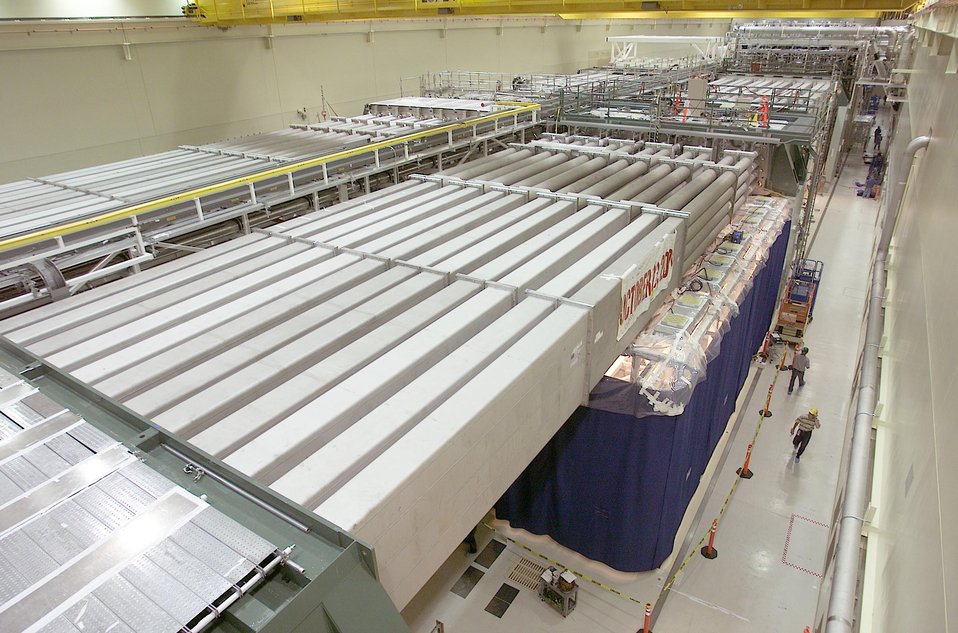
NIF'S LASER BAY 2 BEAM-PATH INFRASTRUCTURE AS COMPLETED, MAY 2000.

THE NATIONAL IGNITION FACILITY AT LLNL ENABLES KEY PROGRAMS AND TECHNOLOGIES THAT SUPPORT DOE'S NATIONAL NUCLEAR SECURITY ADMINISTRATION DEFENSE PROGRAMS AND LLNL MISSIONS, ENSURING THAT THE NATION'S NUCLEAR WEAPONS REMAIN SAFE, SECURE AND RELIABLE. NIF, ONE OF THE CORNERSTONES OF DOE'S STOCKPILE STEWARDSHIP PROGRAM, WILL INTEGRATE THE INERTIAL CONFINEMENT FUSION PROGRAM INTO THE OVERALL STOCKPILE STEWARDSHIP PROGRAM AND FOSTER THE DEVELOPMENT OF ASSOCIATED LASER TECHNOLOGIES.